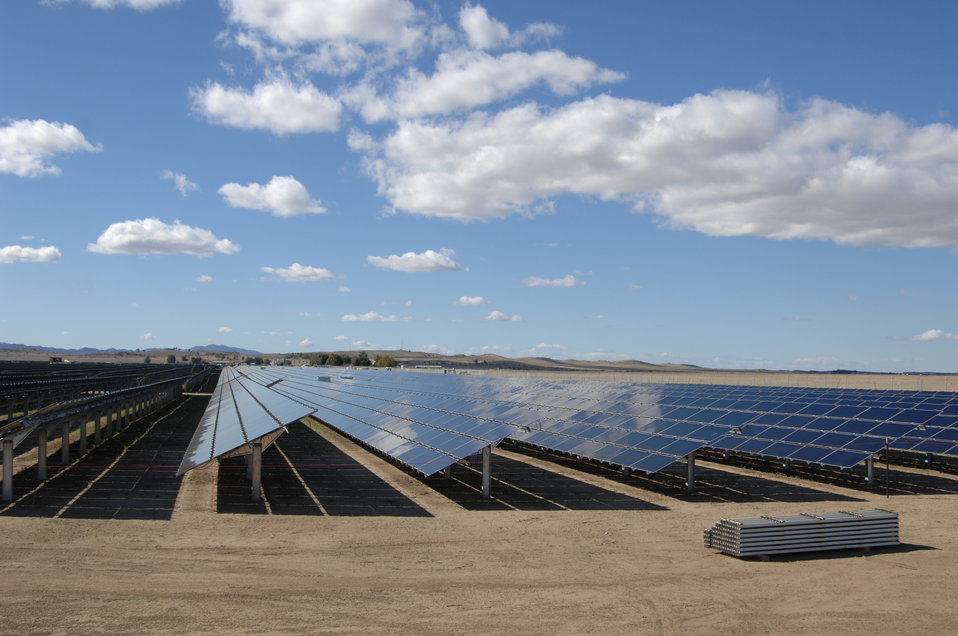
Solar Panels at Topaz Solar 2